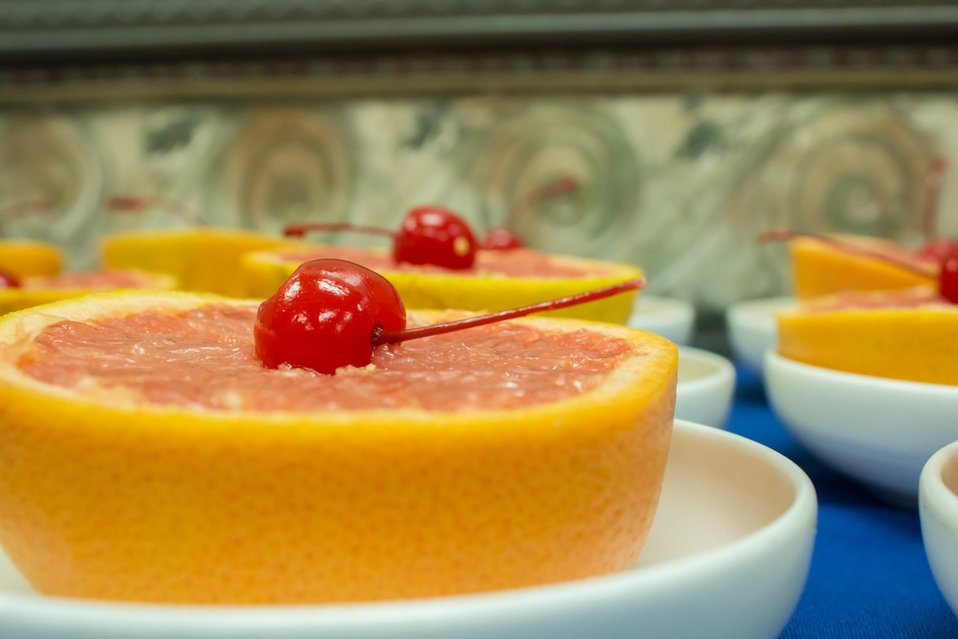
Grapefruit and cherry

A grapefruit and cherry for breakfast..